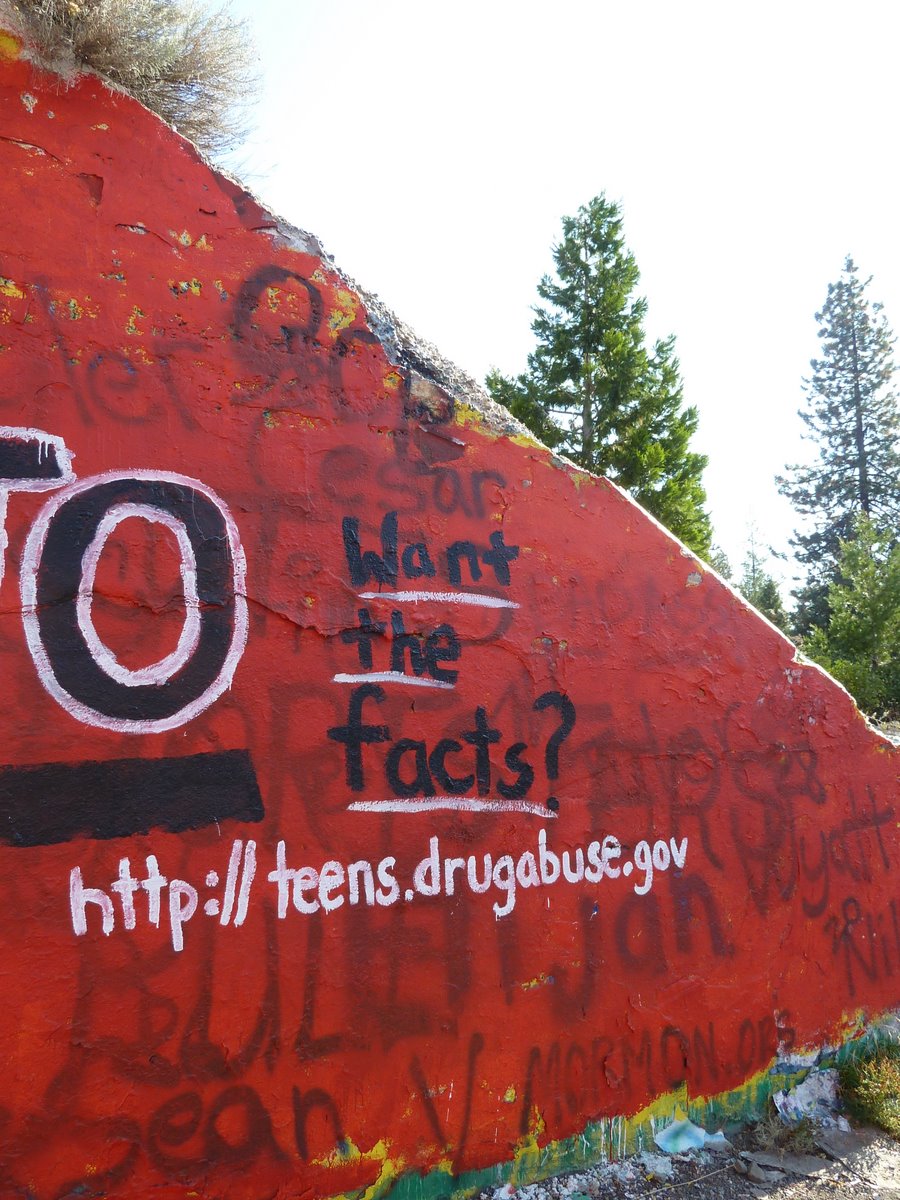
Siskiyou County, CA Drug Facts Week Photos

Students from the leadership class at Mt. Shasta High School painted this bridge to honor those who lost their lives to drug addiction. They also shatter the myths about drug and tobacco companies, and encourage teens to get the facts by visiting the NIDA website for teens.